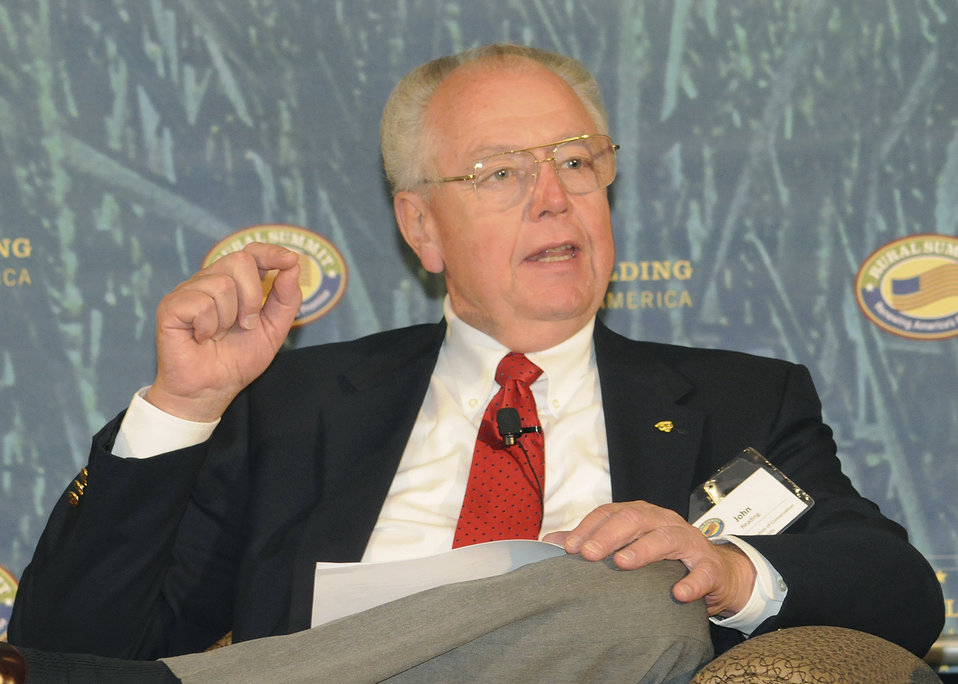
Past President of National Association of Conservation Districts John Redding, responds to a question during A Dialogue on Rural America held at the National Rural Summit held at Jefferson College in Hillsboro, MO., on Thursday, June 3, 2010.
USDA Photo 10di1386-188.